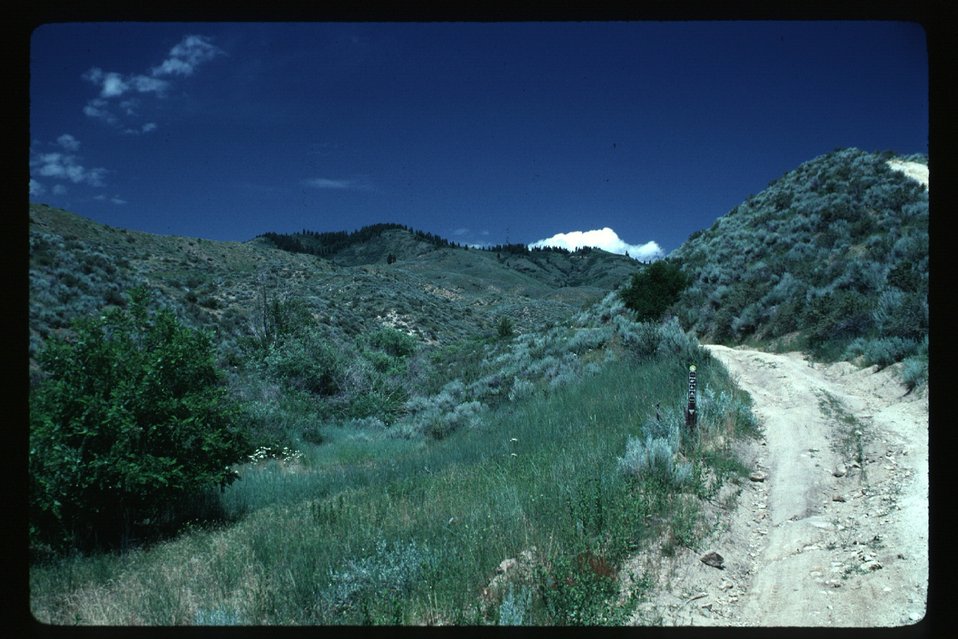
Trail in Boise Foothills Boise Front Four Rivers Field Office LSRD Lower Snake River District